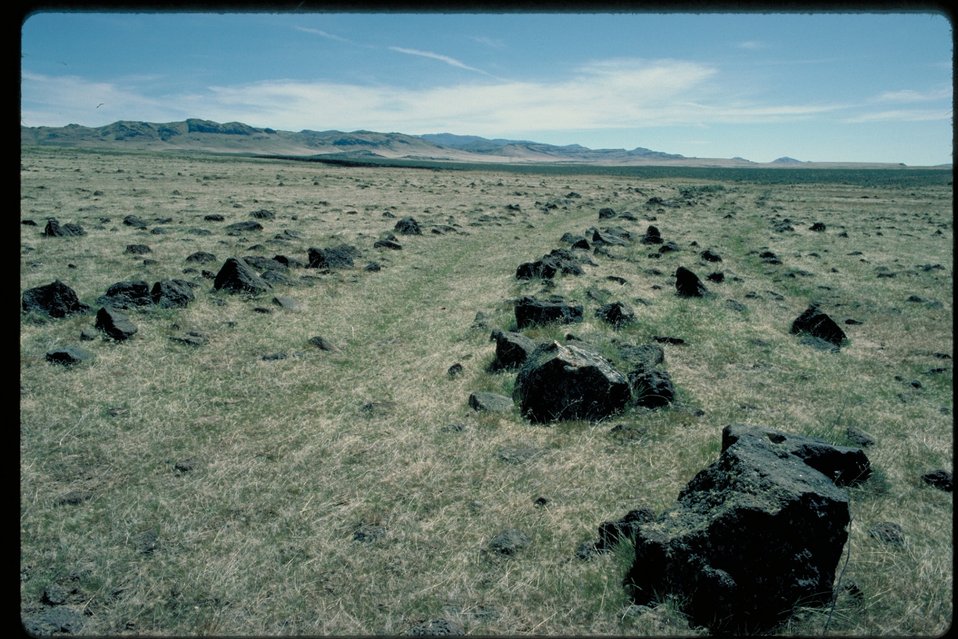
Oregon Trail west of Canyon Creek Lower Snake River District